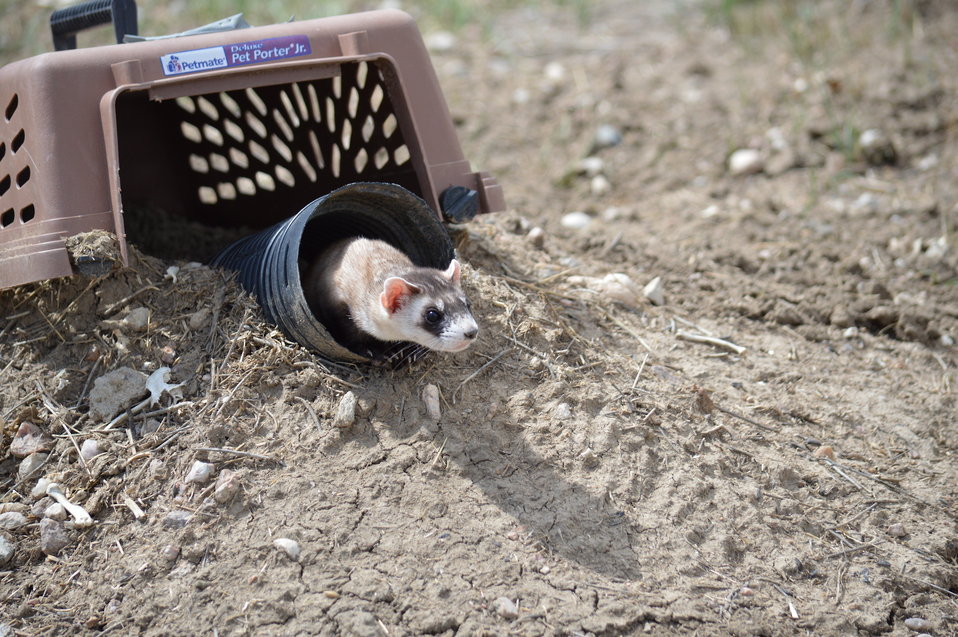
Interns visit the NBFFCC

In the summer of 2012, USFWS Region 6 interns visited the National Black-footed Ferret Conservation Center (NBFFCC) in Colorado to learn how the program reintroduces the endangered Black-footed ferret back into its native habitat.